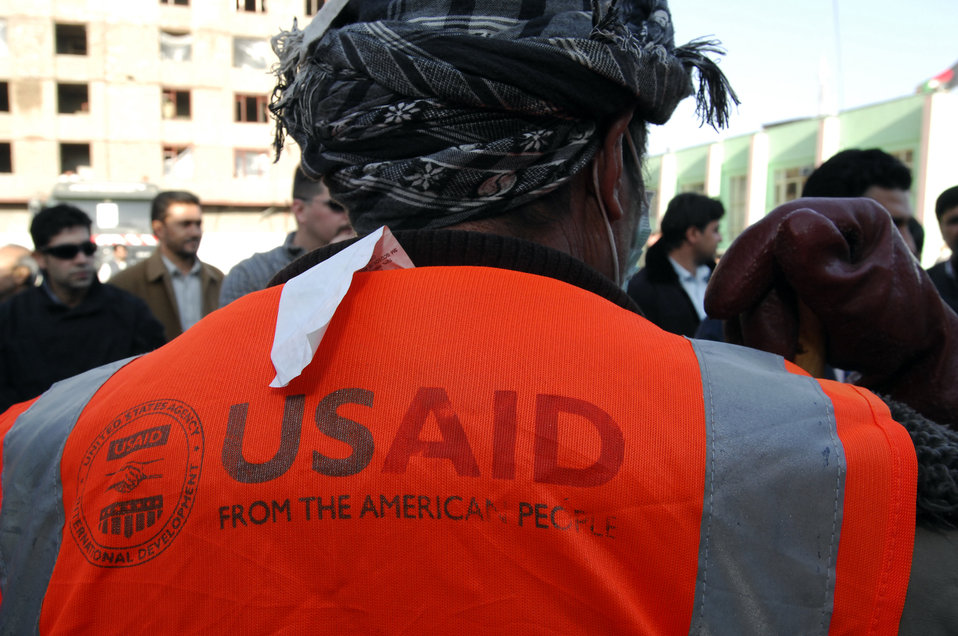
Care90